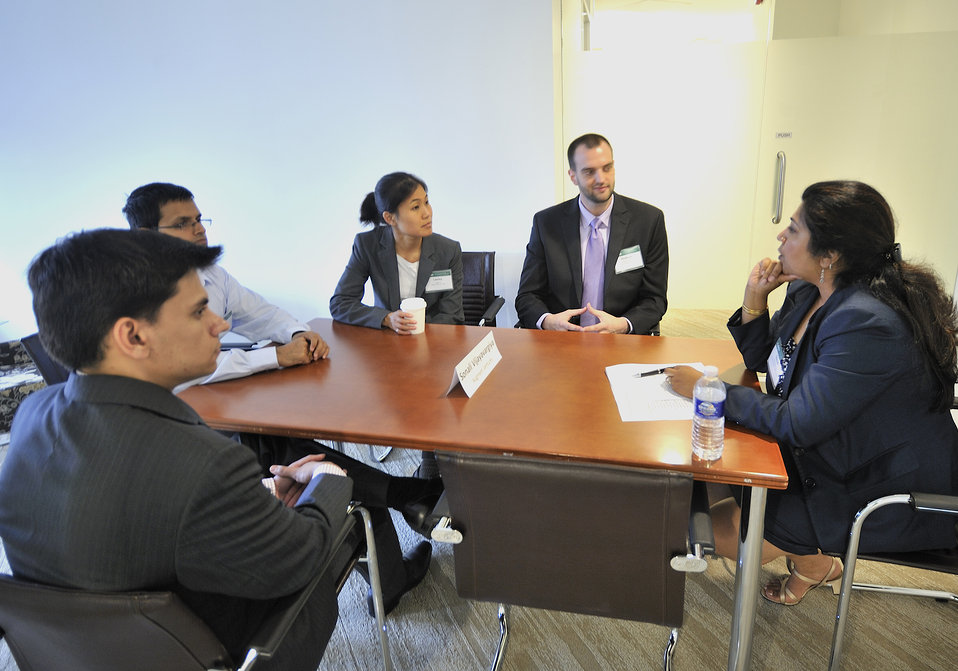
National Clean Energy Business Plan Competition

The National Clean Energy Business Plan Competition inspired nearly 300 university teams across the country to create new businesses to commercialize promising energy technologies developed at U.S. universities and the National Laboratories.